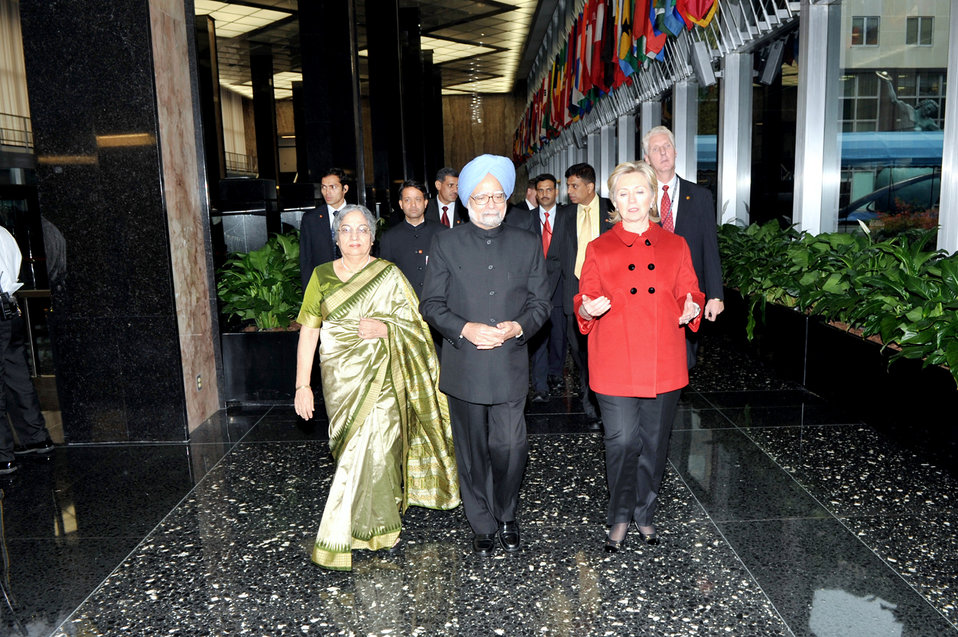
Vice-President Biden, Secretary Clinton Co-Host Social Lunch in Honor of Indian Prime Minister

U.S. Vice-President Joe Biden Dr. Jill Biden co-host a social lunch with U.S. Secretary of State Hillary Rodham Clinton in honor of Indian Prime Minister H.E. Dr. Manmohan Singh and Dr. Gurusharan Kaur at the U.S. Department of State in Washington, DC November 24, 2009.